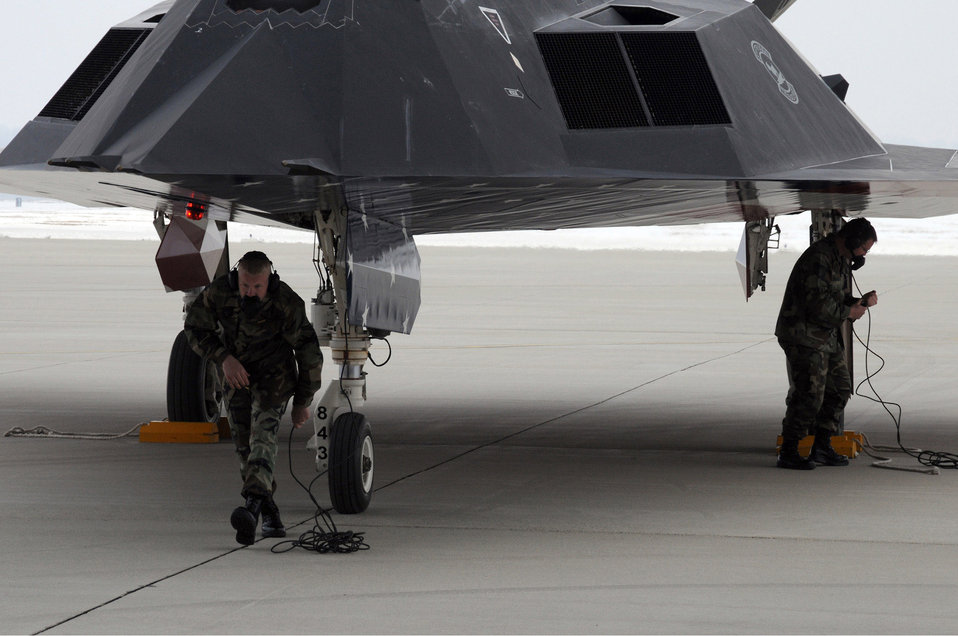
F-117 retires

Crew members from the 49th Fighter Wing, Holloman Air Force Base, N.M. recieve an F-117 Nighthawk after its flyover during the Nighthawk farewell ceremony at Wright-Patterson Air Force Base, Ohio, March 11.